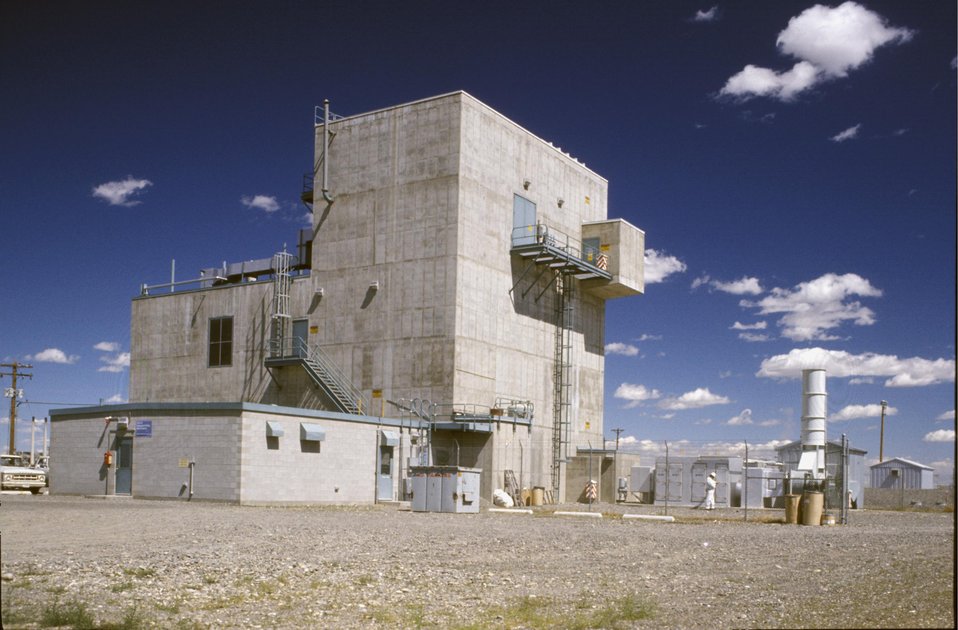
OVERALL VIEW OF AN EVAPORATOR.

LIQUID WASTES ARE PUMPED TO THE EVAPORATOR FROM THE UNDER- GROUND STORAGE TANKS. THE WASTE IS HEATED IN THE REBOILER BEFORE ENTERING THE EVAPORATOR VESSEL WHERE THE WATER BOILS OFF IN A VACUUM ATMOSPHERE TO LEAVE A HIGHLY CONCENTRATED LIQUID CONTAINING SOLID CHEMICAL SALT CRYSTALS. EVAPORATED WATER IS CONDENSED, PROCESSED TO REMOVE CONTAMINATION (TO DRINKING WATER STANDARDS), THEN DISCHARGED TO AN UNDER- GROUND CRIB. THE RESIDUAL RADIOACTIVE MIXTURE OF SALT CRYSTALS AND LIQUID (A SLURRY) IS PUMPED FROM THE EVAPORATOR BACK INTO A STORAGE TANK WHERE THE SALT CRYSTALS SETTLE TO THE BOTTOM. REMAINING LIQUID IS RETURNED FOR FURTHER EVAPORATION.